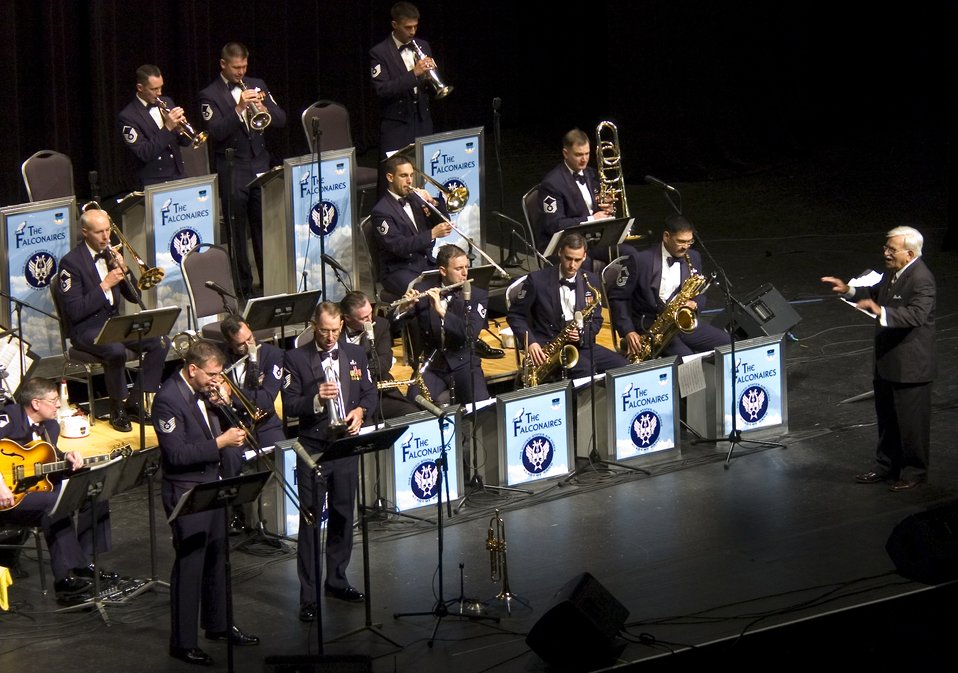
Academy band wows crowd with help from old friend

The Falconaires from the U.S. Air Force Academy Band perform with Bandmaster Sammy Nestico at the Lila Cockrell Theatre in San Antonio on July 22.